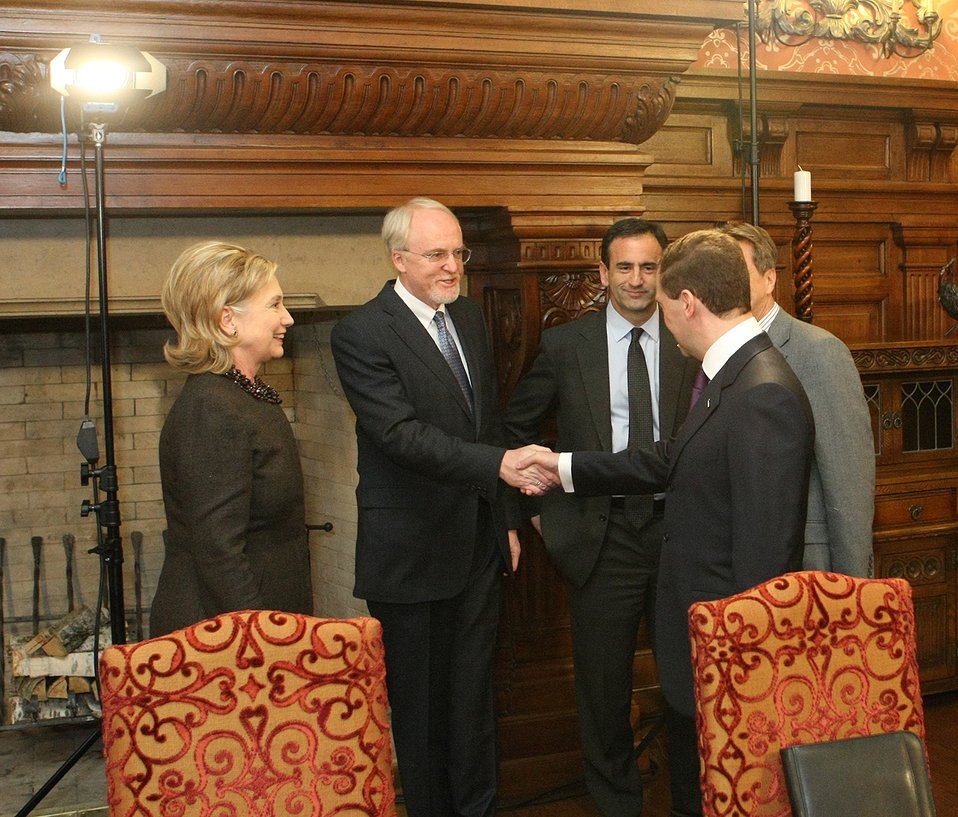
Ambassador Beyrle Shakes Hands With Russian President Medvedev

U.S. Secretary of State Hillary Rodham Clinton, Ambassador Beyrle, and Assistant Secretary Philip Gordon meet President Medvedev during a meeting at the Barvikha residence outside Moscow, March 19, 2010.